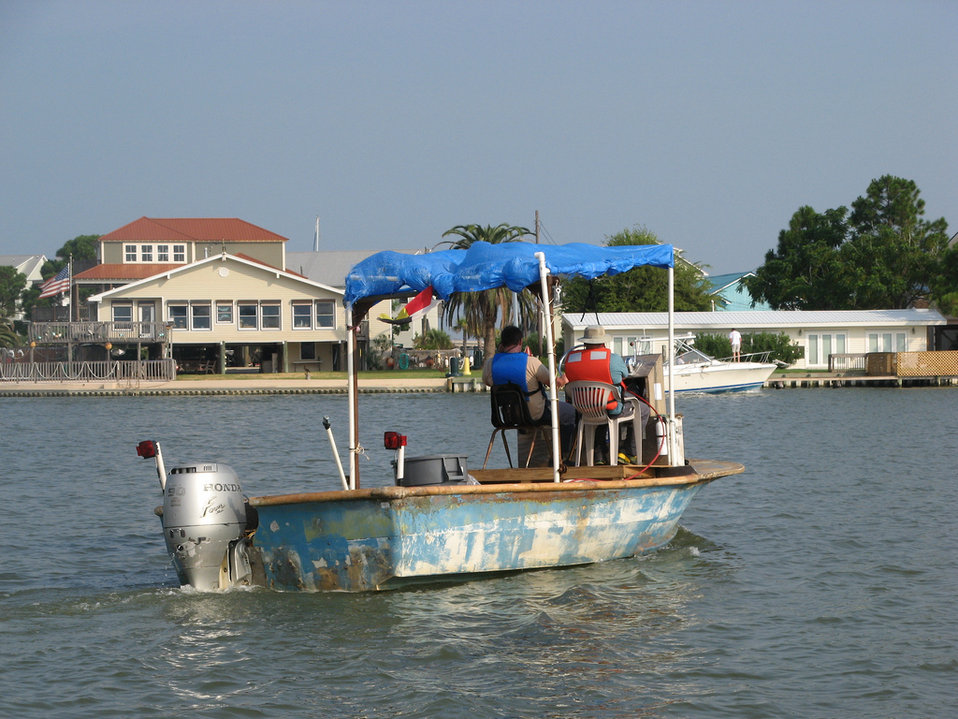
Vessel of Opportunity Credit: Catherine Hibbary, USFWS